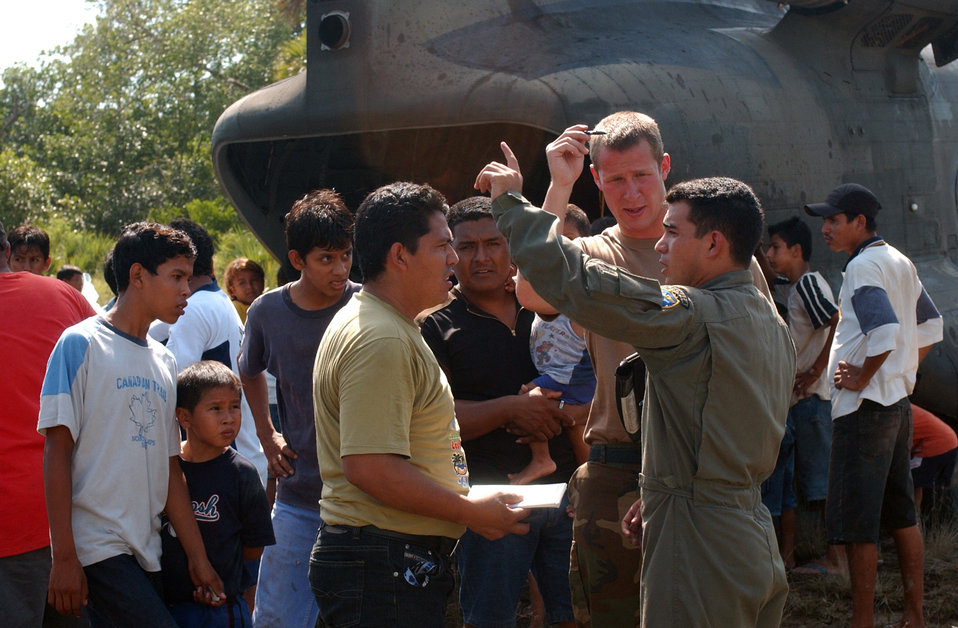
American forces provide Guatemala relief

GUATEMALA -- Army 1st Lt. Matthew Tunison (front, right) works with a translator from the Guatemalan Air Force to get an assesment of road conditions into the village of Ocos, Guatemala, after airlifting a shipment of food, water and medicine. The area was devastated by the effects of Hurricane Stan. Members of the 1st Battalion, 228th Aviation Regiment and Joint Task Force-Bravo arrived here Oct. 7 to help airlift relief supplies to those affected by the hurricane. Lieutenant Tunison is a helicopter pilot with the 1-228th AR.